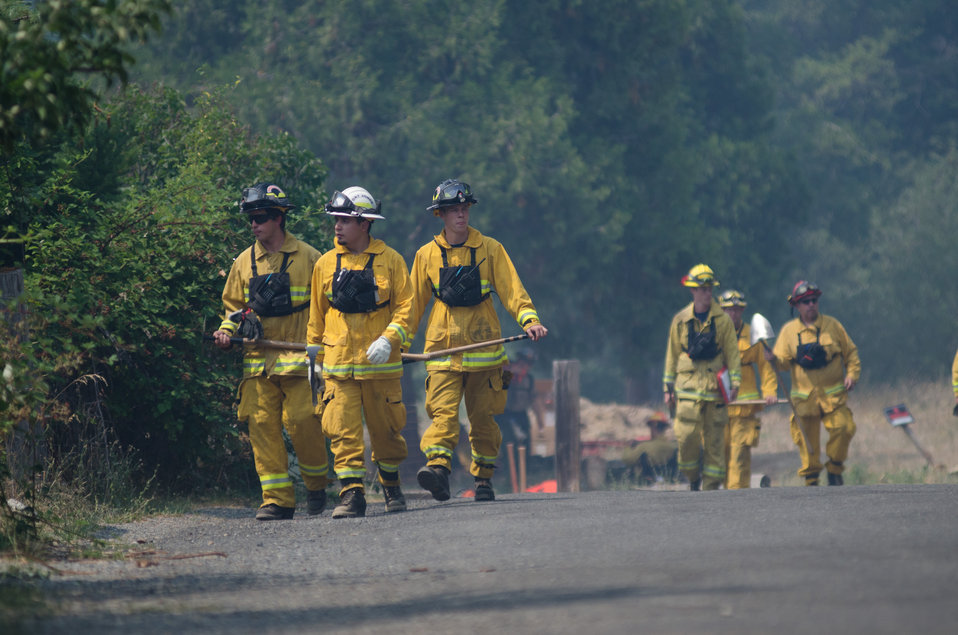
Fire fighters specializing both structural and wildland firefighting from Tahoe National Forest, Mt. Shasta-Trinity National Forest, South Yreka Fire Department, Dunsmuir-Castella Fire Department and others, have been called to the Salmon River Complex Fire, and conduct their structure-by-structure assessment of the urban intermix environment, at Sawyers Bar, CA in the Klamath National Forest, Tuesday, Aug. 6, 2013. The firefighters advise resident about fire prevention measures they are doing on their own as well as other measures they could take to prepare for fire. Actions such as moving away firewood, cutting and clearing plants next to their structures, and using garden hoses to soak structures and grounds all help in the event the main fire comes into their town.
There are two types structure environments in the realm of wildland firefighting.
This urban intermix structural protection environment is generally the more challenging, where structures have been built within a wildland area, isolated to some degree from other structures, but with no separation from wildland fuels (trees, brush and grass). This requires each structure to be assessed on a case-by-case basis. Fire protection measures will be tailored to each situation; defending these structures require a more complex solution, more firefighters, equipment and resources per structure.